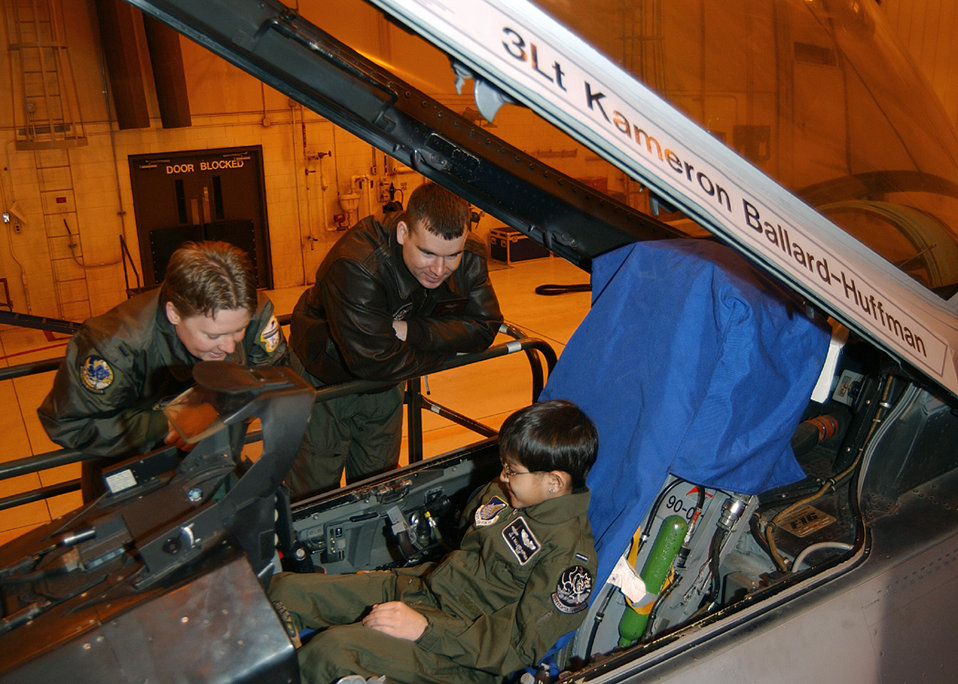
Pilot for a day

EIELSON AIR FORCE BASE, Alaska -- First Lts. Michael Pickett and Allena Lewis give Kameron Ballard-Huffman a tour of an F-16 Fighting Falcon here. Kameron served as Fighter Pilot for a Day on March 18. The program lets terminally ill children see what it is like to be a fighter pilot. Kameron is in the end stage of a rare liver disease. He is from Husila, Alaska, a town about 250 miles northwest of Fairbanks. Lieutenant Pickett is assigned to the 355th Fighter Squadron, and Lieutenant Lewis is assigned to the 18th Fighter Squadron.